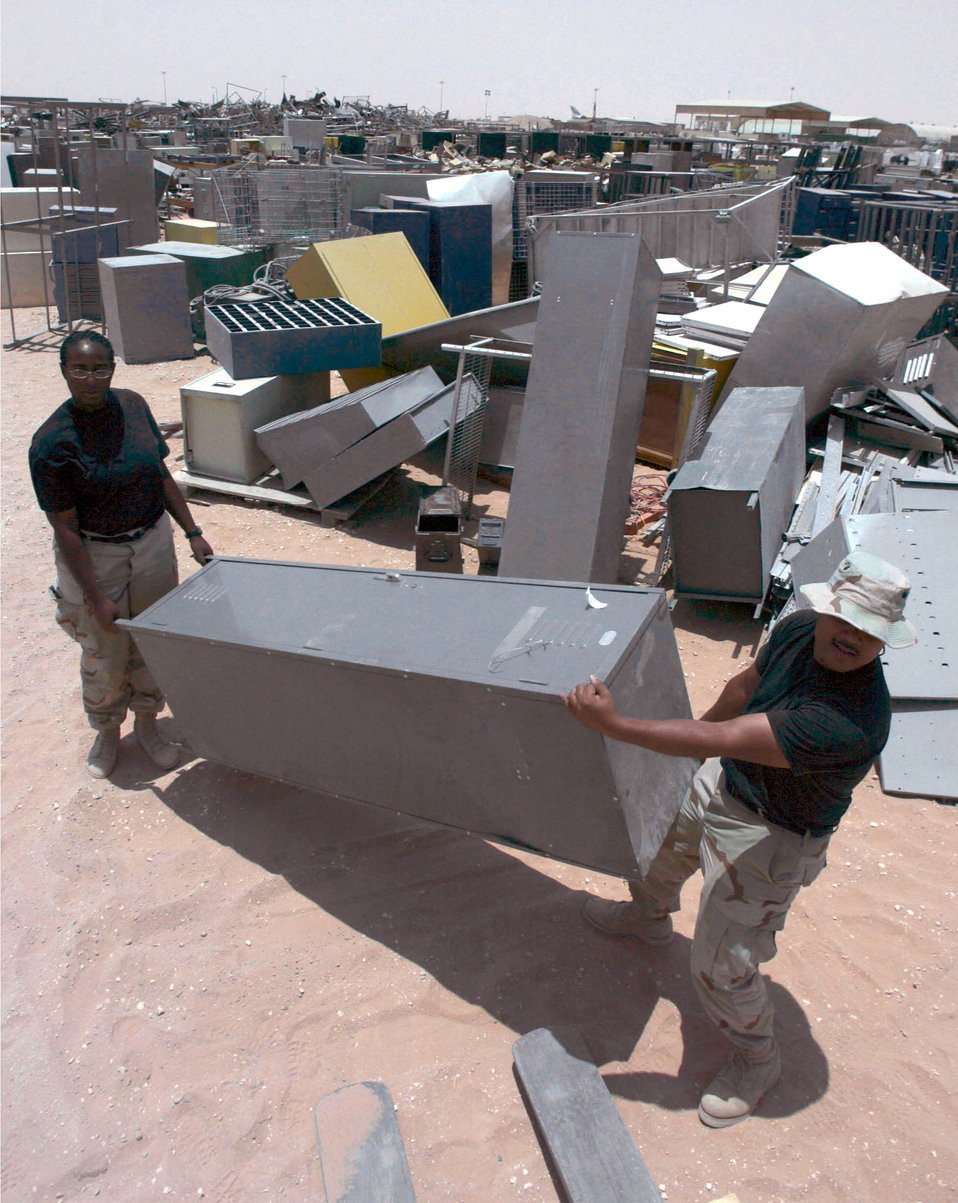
Equipment management

PRINCE SULTAN AIR BASE, Saudi Arabia -- Staff Sgts. Shannon Mathews and Carlos Mora maintain the defense reutilization and marketing office yard here. They are assigned to the 363rd Expeditionary Logistic Readiness Squadron. Thousands of items fill the yard from closing sections, units and squadrons as the 363rd Air Expeditionary Wing draws down in Saudi Arabia.